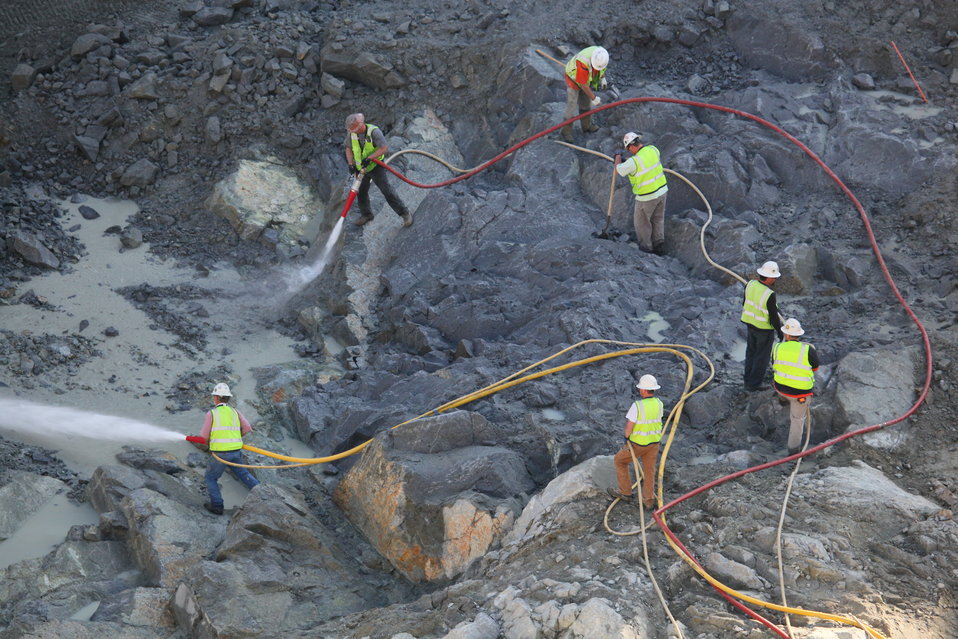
Excavation at the Folsom auxiliary spillway

Crews and equipment continue excavation at the Folsom Dam auxiliary spillway in Folsom, Calif., Feb. 17, 2012. The spillway will allow Folsom Dam to release water sooner and more safely. The project is part of the Folsom Dam Joint Federal Project, a joint effort of the U.S. Army Corps of Engineers Sacramento District, the U.S. Bureau of Reclamation, the Central Valley Flood Protection Board and the Sacramento Area Flood Control Agency to improve the safety of the dam and reduce flood risk for the greater Sacramento area.